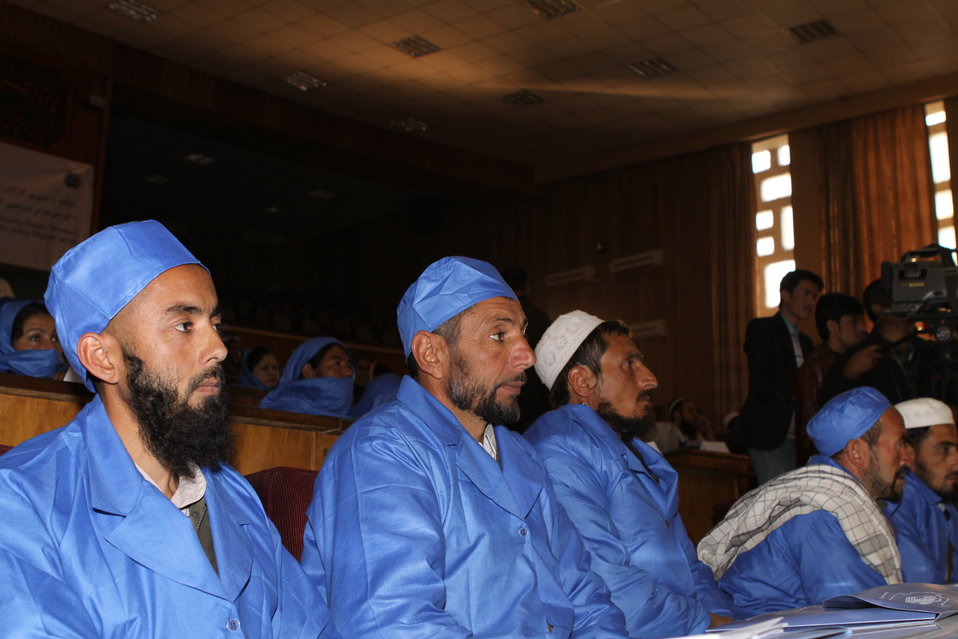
Community Health Workers Celebrated

Kabul, Afghanistan | December 5, 2010 — In support of the United Nations designated International Volunteer Day for Economic and Social Development, Afghanistan’s Ministry of Public Health celebrated its annual Community Health Worker Day today. Acting Minister of Public Health Dr. Suraya Dalil, USAID Senior Deputy Mission Director Robert Hellyer, other government officials, and international donors joined in recognizing the critical contribution of community health workers in Afghanistan and encouraging them to continue their voluntary support to their communities.
The event praised the contributions of the more than 22,000 volunteers throughout the country who deliver community level health-education, counseling, and services out of village health posts located in private homes. The Ministry of Public Health envisioned that community-based healthcare programs will actively encourage communities and families to adopt healthy lifestyles and behaviors, and provide families access to high quality and socially acceptable preventative medicine and life-saving services.
“We have 22,000 community health workers in Afghanistan that are able to implement the basic and standard medicines. They all have been trained through a job description,” said Minister Dalil. Addressing the health workers, she added, “I am proud and feel powerful that I have people like you.”
USAID-funded health projects collaborate closely with the Ministry of Public Health to improve the health and nutritional status of Afghans, provide quality primary healthcare, and promote healthy behaviors at the community and household-levels. USAID supported the training of more than 9,000 of the volunteer community health workers currently working in Afghanistan.
“On behalf of the American people, I congratulate the Community Health Workers for their diligence to gain the skills and knowledge necessary to serve their communities in this important role,” said USAID Senior Deputy Mission Director Hellyer. “USAID strongly supports community based health care and believes that quality community-based health services are essential to reaching Afghanistan’s Millennium Development Goals.”
To support the Basic Package of Health Services, USAID assisted in developing the community health worker training manual, helped train community health worker supervisors and master-trainers, facilitated in-service training, and produced and developed reporting tools, job aids, and education materials.